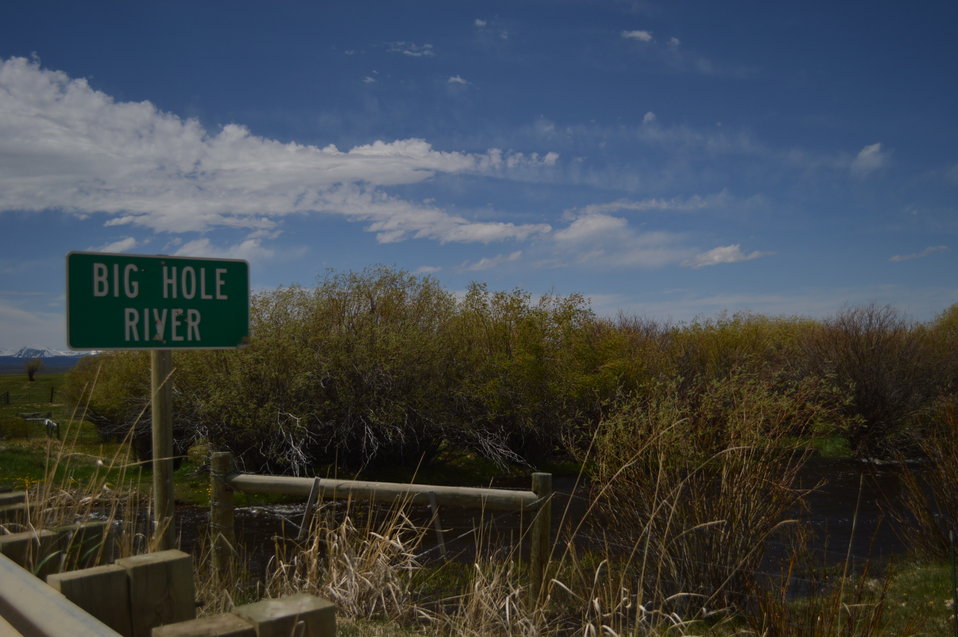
Regional Leadership Visit to Montana 2014